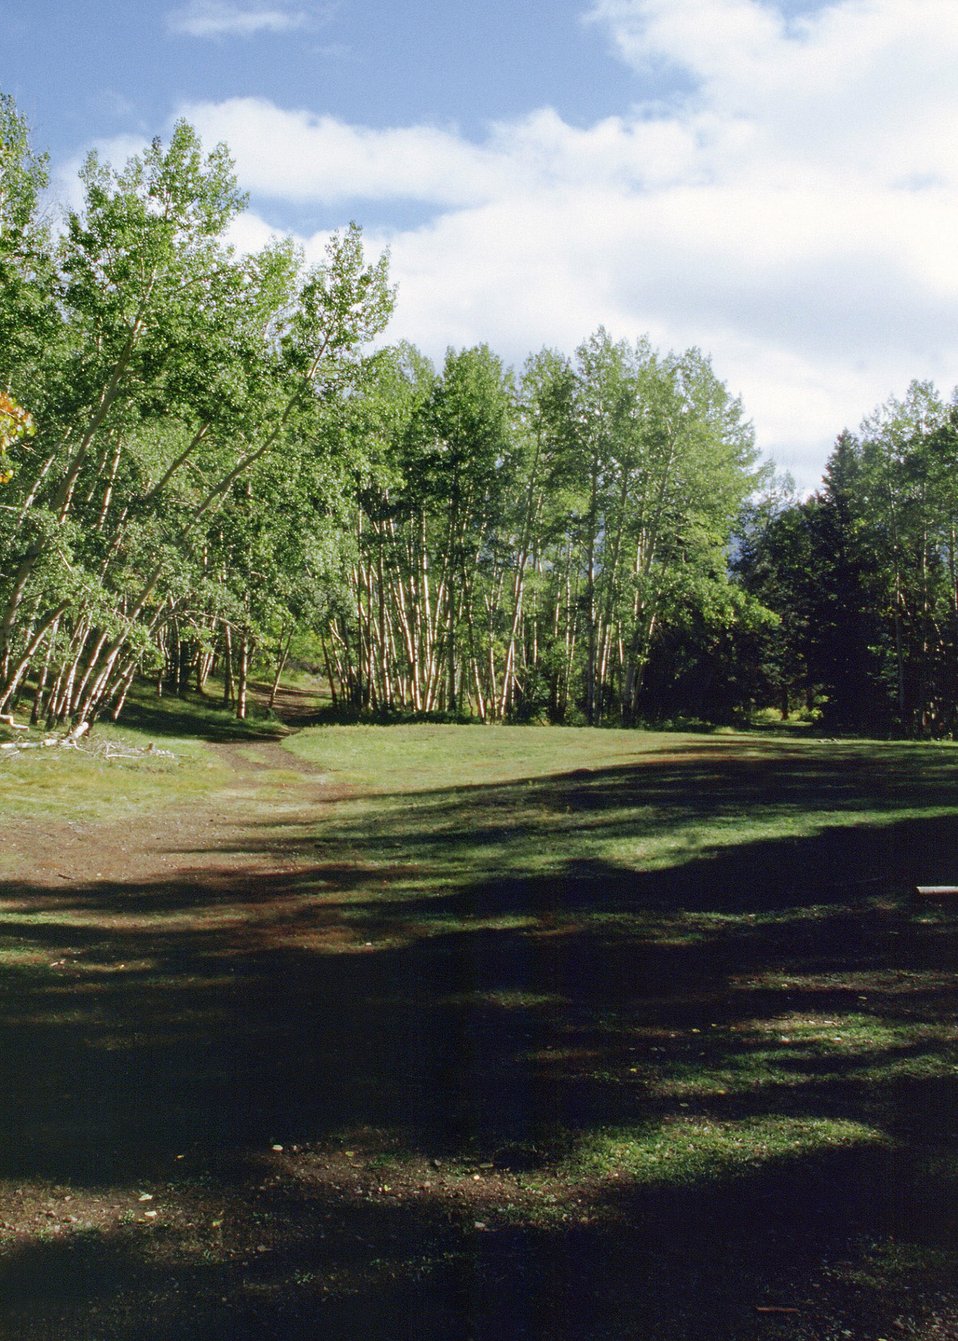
Dirt road with trees and meadows